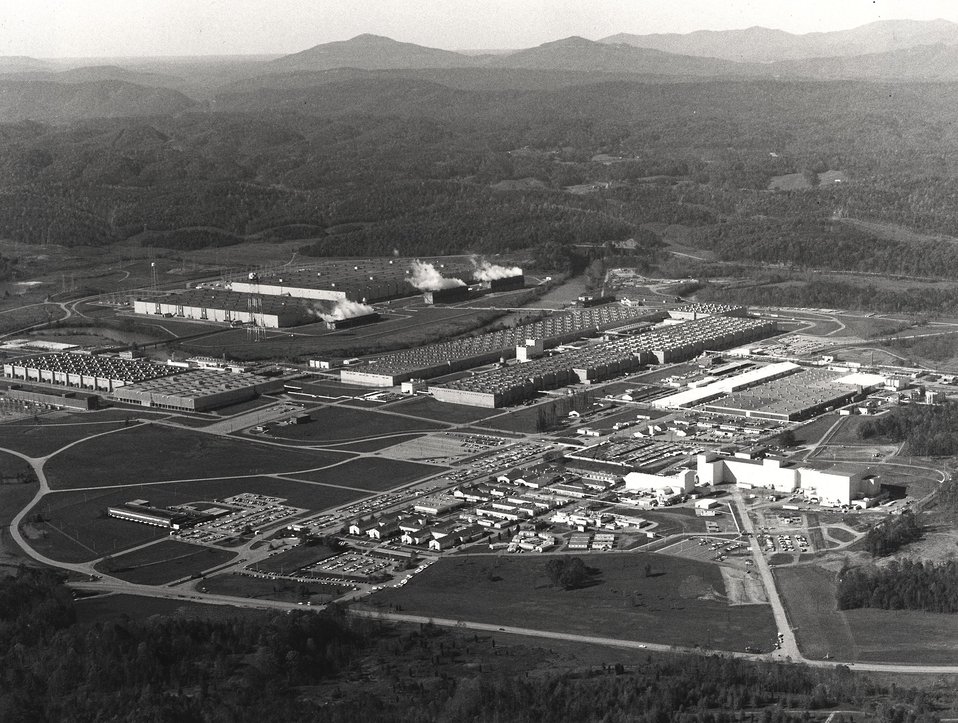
The Energy Research and Development Administration's Oak Ridge (Tenn.) Gaseous Diffusion Plant is the first such facility built in the wold for production of enriched uranium. The original gaseous diffusion process building 'K-25,' which is the U-shaped building, was constructed in 1943 and began operating in 1945, producing enriched uranium for the Manhattan Project of World War II. c. 1976